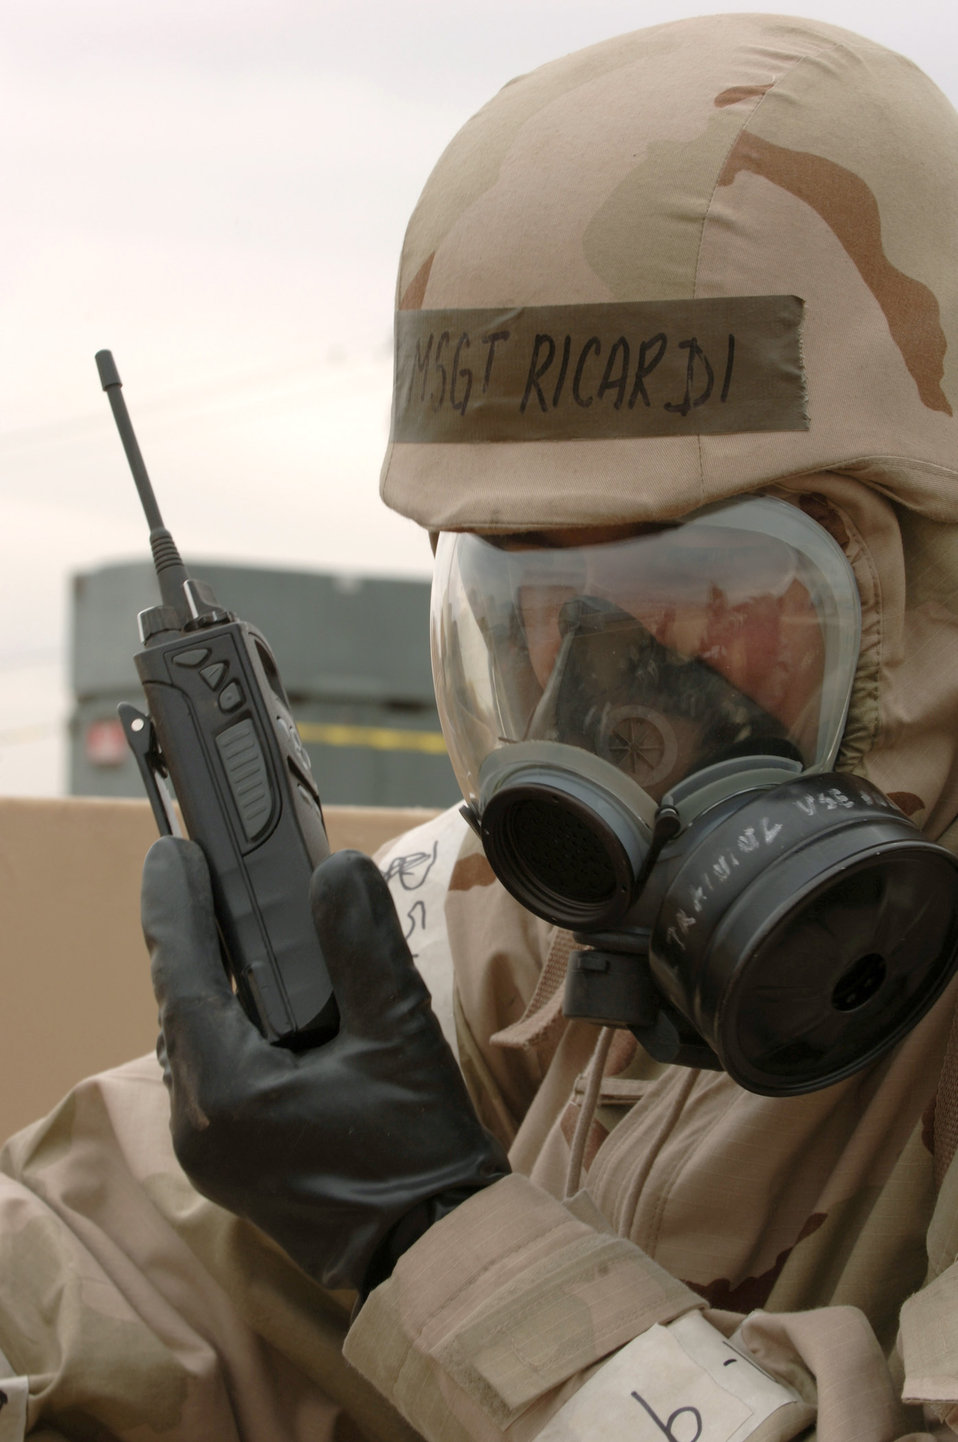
Preparing to deploy

Master Sgt. Marcus Ricardi directs personnel movements from an improvised bunker at a simulated deployment location on Tuesday, April 4, 2006. Sergeant Ricardi is with the 355th Communications Squadron.